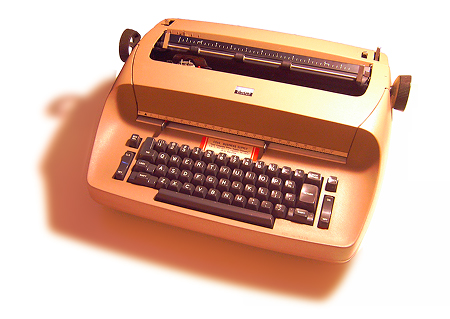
An IBM Selectric typewriter, model 713 (Selectric I with 11' writing line), circa 1970.